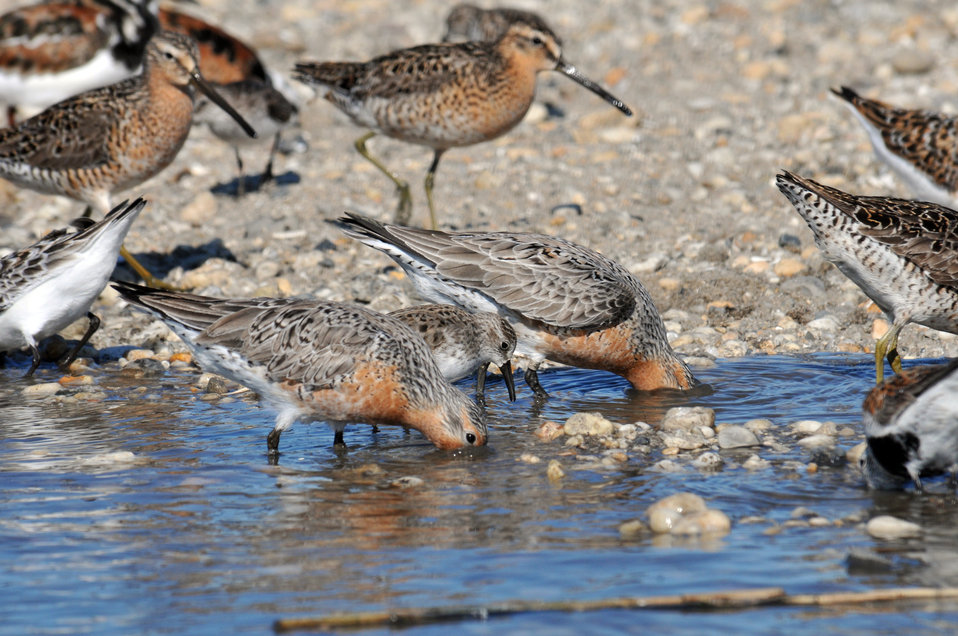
Red Knot

Mispillion Harbor, Delaware.